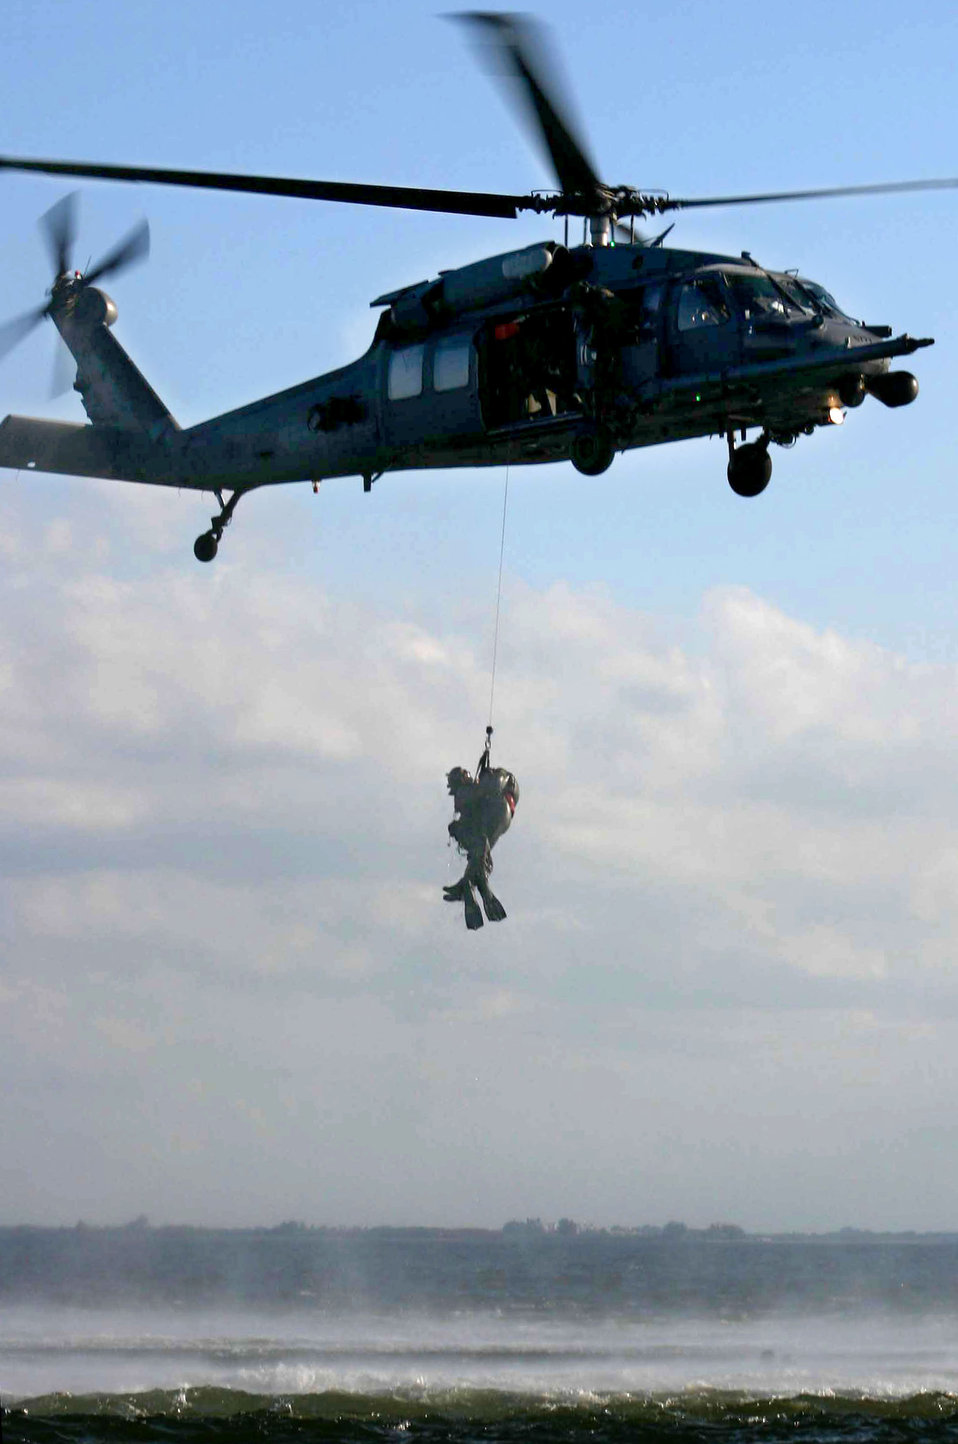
Crew makes another 'save'

A pararescueman and an